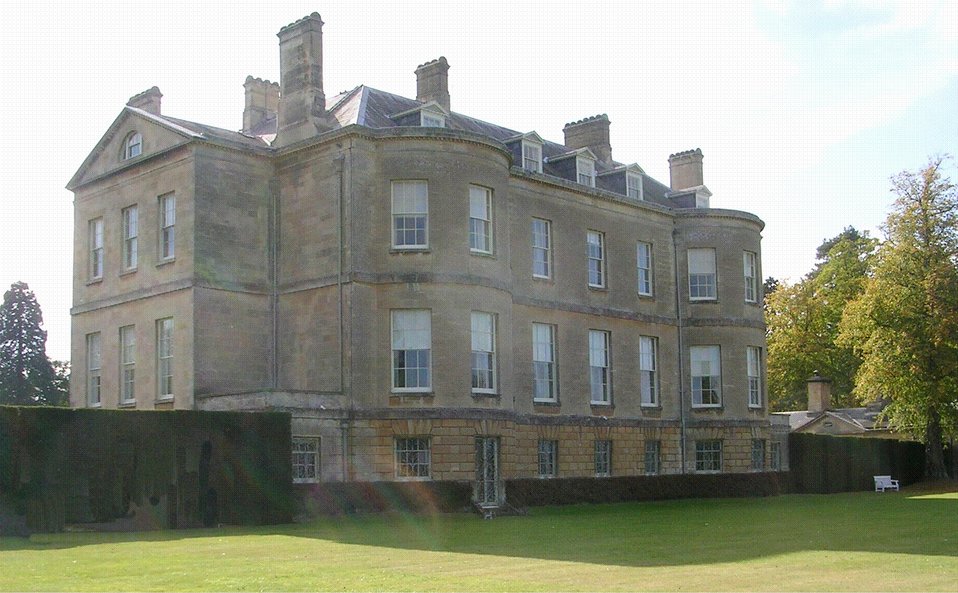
Buscot Park, the north front